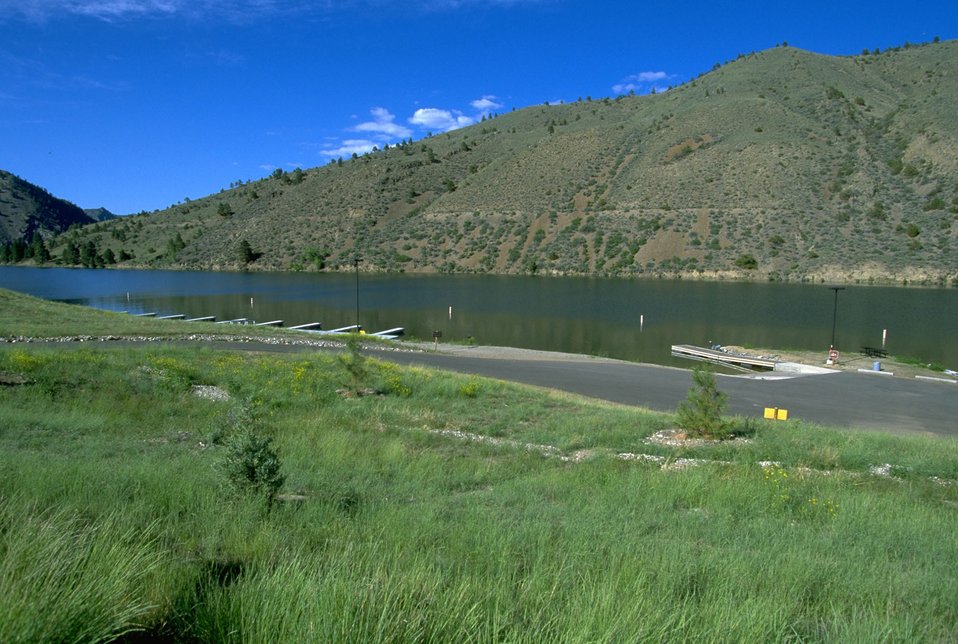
Marina and boat ramp at Devils Elbow Campground